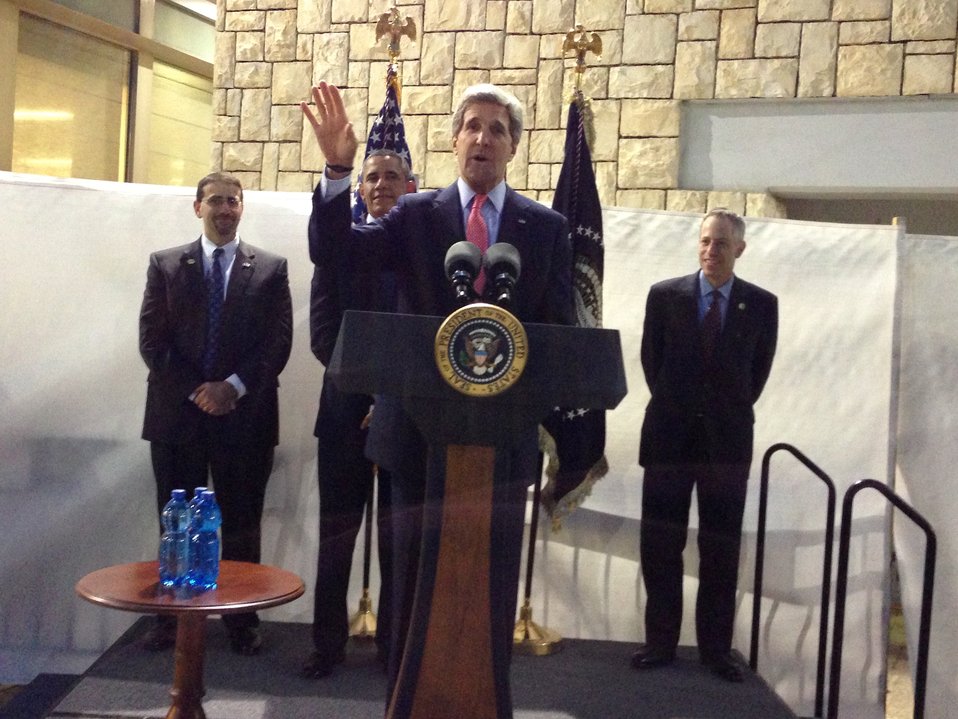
Secretary Kerry Introduces President Obama at Consulate Jerusalem

U.S. Secretary of State John Kerry, flanked by U.S. Ambassador to Israel Daniel Shapiro, left, and U.S. Consul General Michael Ratney, right, introduces President Barack Obama at the U.S. Consulate General in Jerusalem on March 21, 2013.